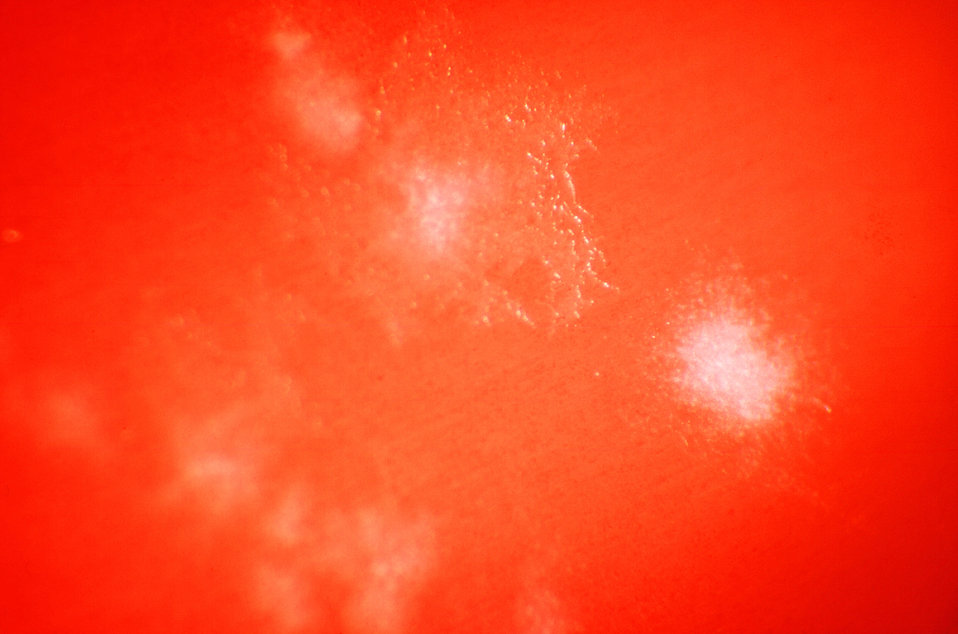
Under a low magnification of 15X, this photograph revealed some of the details displayed atop a Petri dish culture of rod-shaped, Gram-positive Clostridium septicum bacteria, which had been grown on this blood agar plate (BAP), for a 48hr time period.